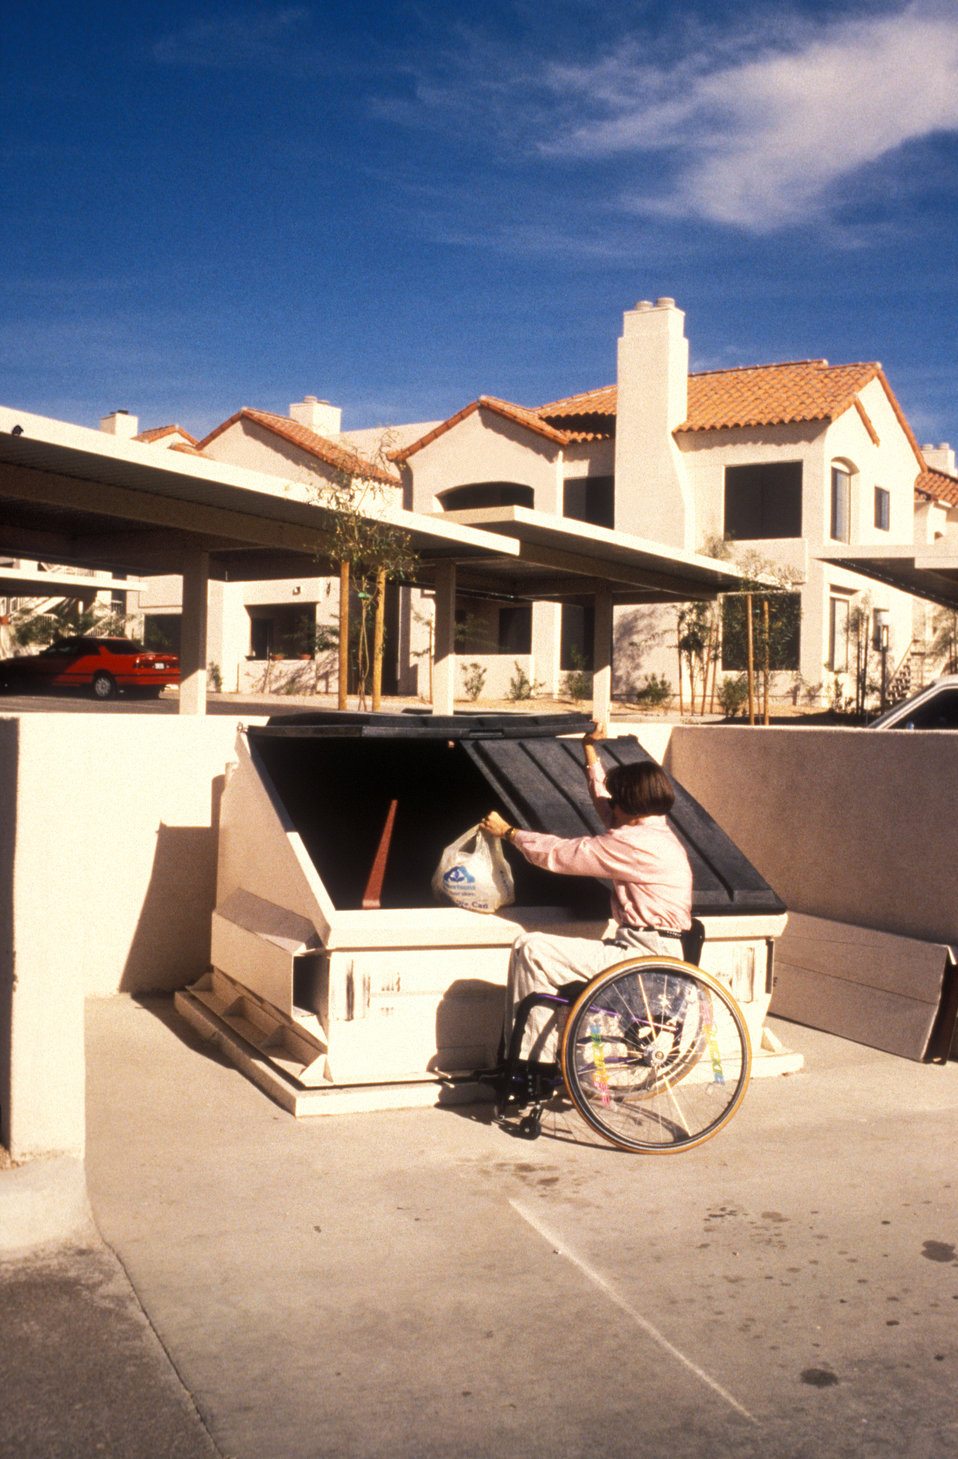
In this 1997 image, a woman seated in a wheelchair was shown throwing away a bag of trash into a dumpster that had been designed with a very low rim. Dumpsters with a lowered rim height, equipped with a lightweight lid are much easier to use by residents who are using mobility devices, or who have trouble lifting or sliding heavy-lidded doors. A feature such as an accessible dumpster is a critical component in the creation of accessible public spaces such as the multifamily housing depicted here.